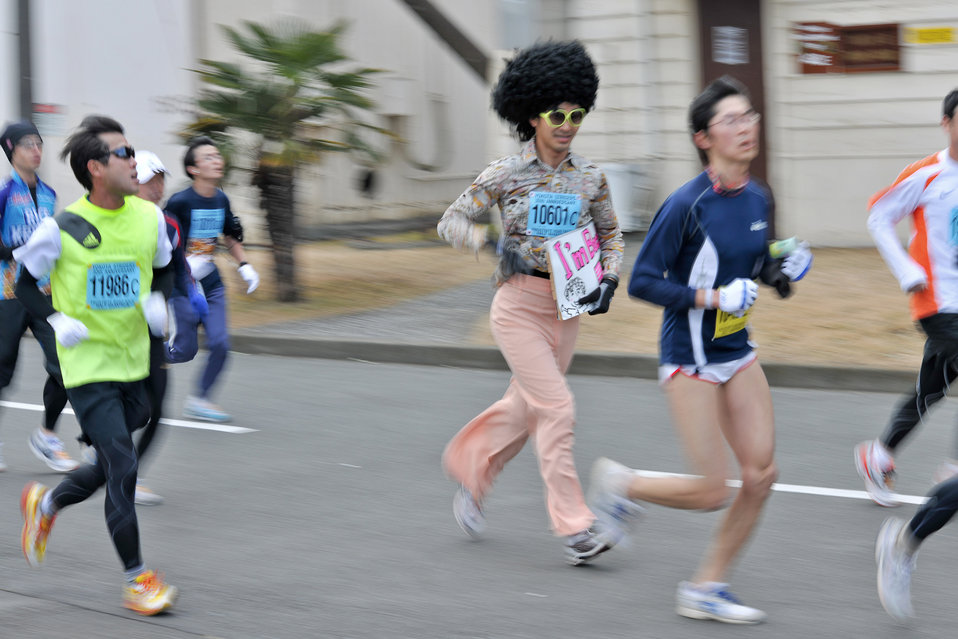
The 30th Annual Frostbite Road Race

A runner dressed as a 1970s disco attire participates in the 30th Annual Frostbite Road Race Jan. 16, 2011, at Yokota Air Base, Japan. Some of the 6,000 runners who participated chose to wear costumes, an act that has become a yearly tradition.